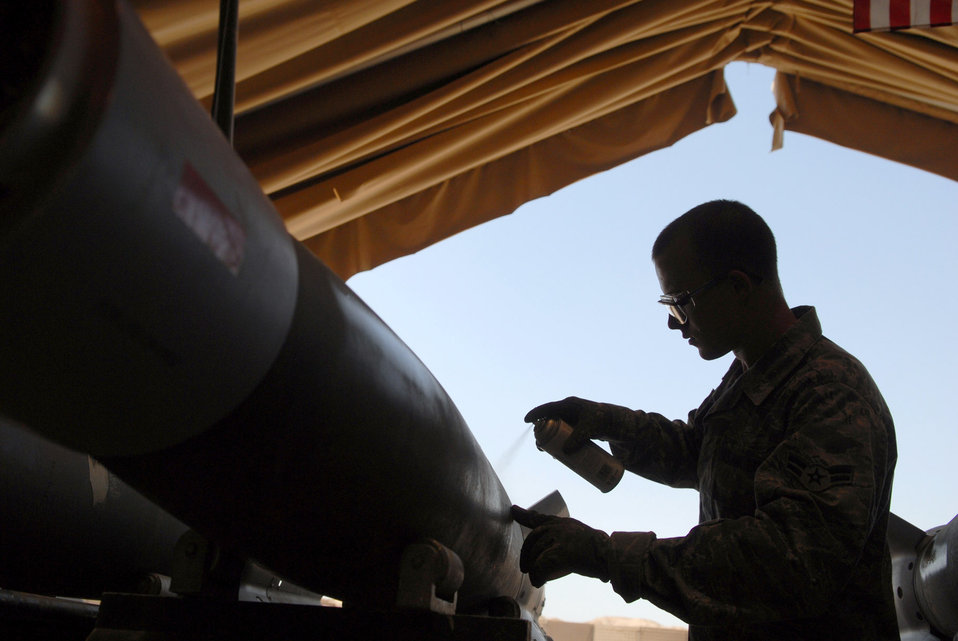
Some assembly required

Airman 1st Class Richard Spurgeon spray paints munition specifications on a guided bomb unit-12 June 16 at Joint Base Balad, Iraq. The pained code will tell weapons loaders the munition type and what components are contained in it. The GBU-12 can self-guide to a target pinpointed by a laser designator, which helps to minimize collateral damage resulting from detonation. Airman Spurgeon is a 332nd Expeditionary Maintenance Squadron munitions systems specialist deployed from Shaw Air Force Base, S.C.